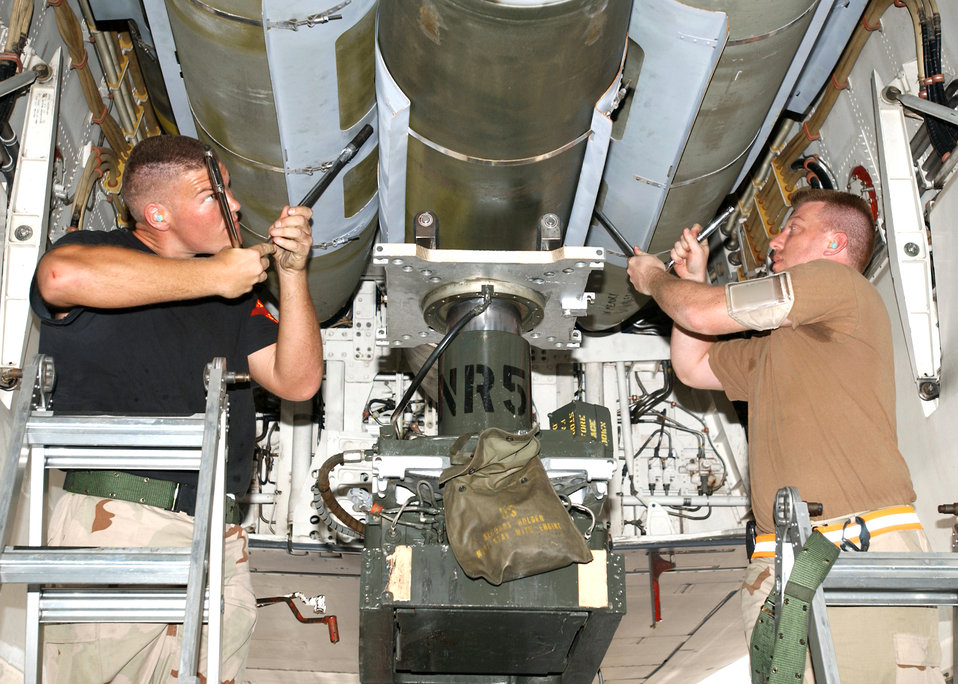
Bomb's away!

OPERATION ENDURING FREEDOM -- Staff Sgt. Kevin Simpson (left) and Senior Airman Wayne Manko sway a bomb to prevent it from rocking after it is locked into a bomb rack on a B-1B Lancer. They are assigned to the 40th Expeditionary Maintenance Squadron at a forward-deployed location.